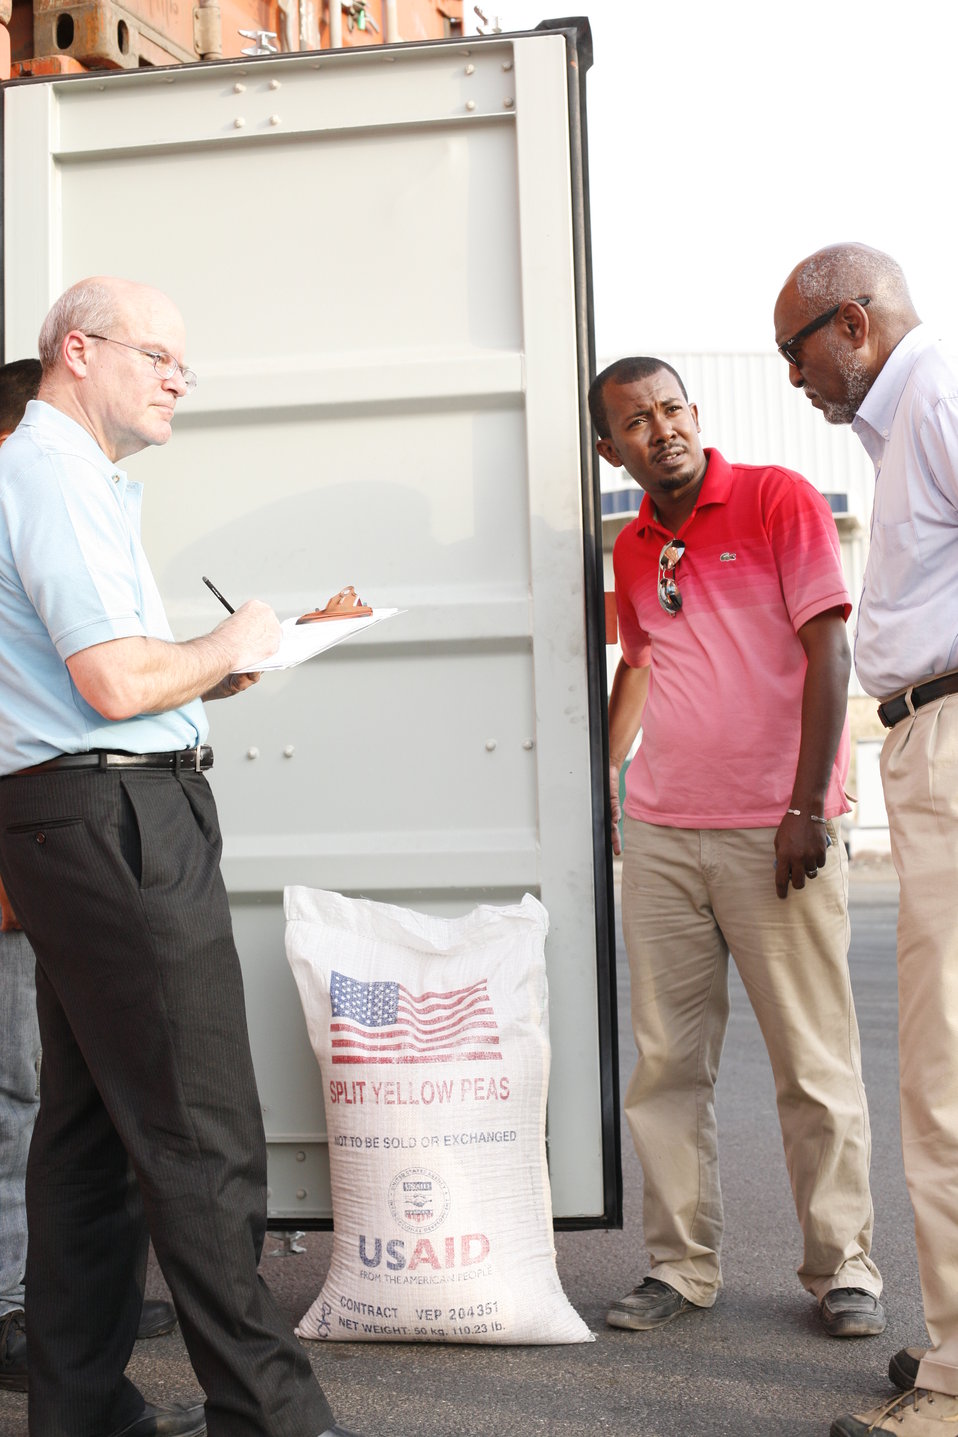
USAID Deputy Administrator Steinberg and Assistant Secretary Carson Review U.S. Food Aid in Djibouti

U.S. Agency for International Development (USAID) Deputy Administrator Donald K. Steinberg, left, and Assistant Secretary of State for African Affairs Johnnie Carson, right, review U.S. food aid in Djibouti, Republic of Djibouti, on July 8, 2011.